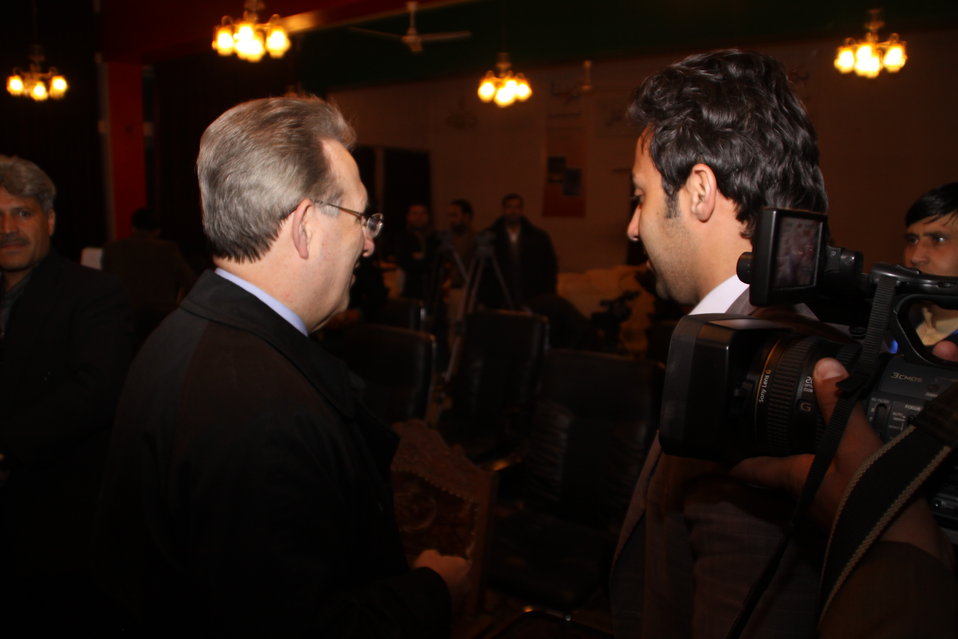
U.S. Ambassador E. Anthony Wayne